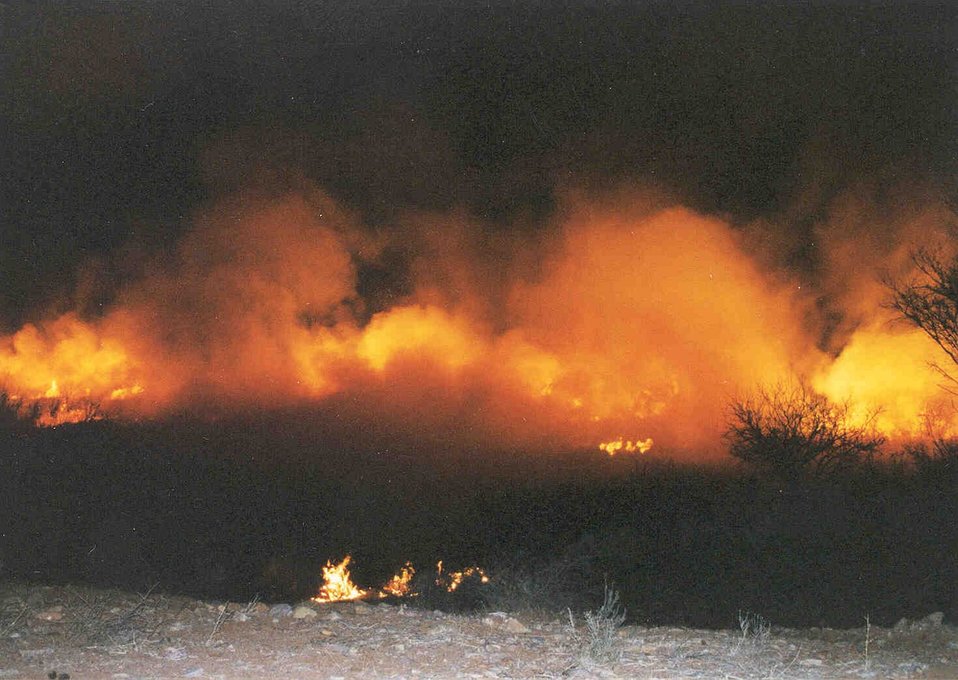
The Center Fire on the Las Cienegas National Conservation Area.